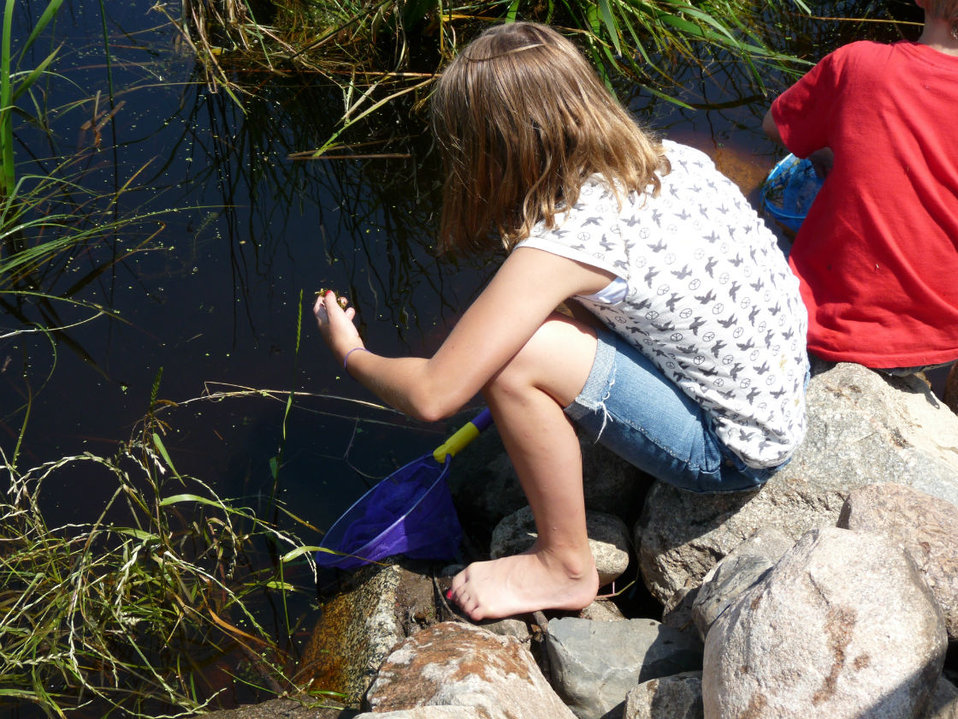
Learning about aquatic plant species

This young lady enjoyed the hands on approach while learning about various aquatic plant species.